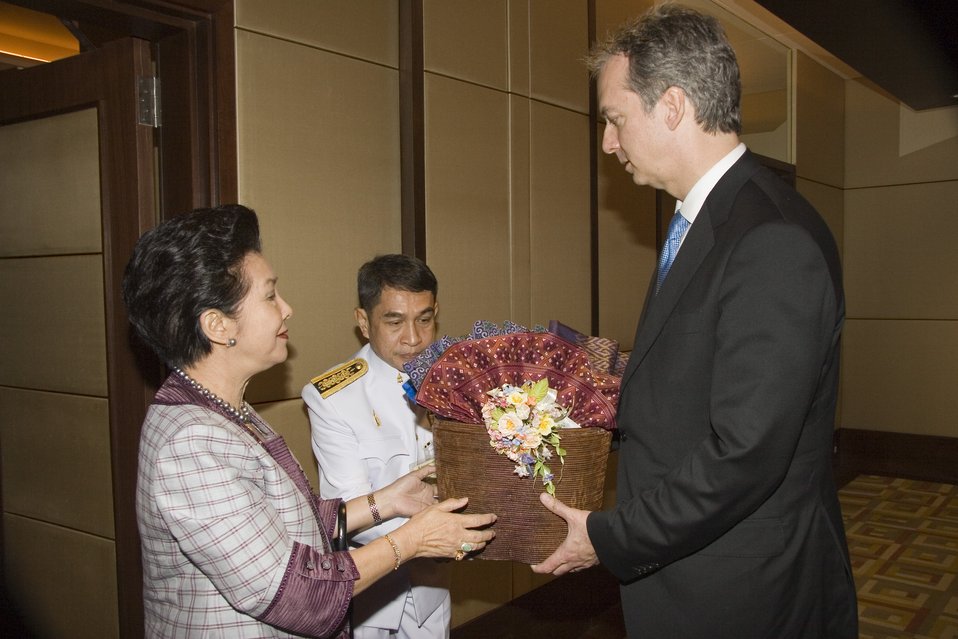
U.S. Ambassador to Thailand Meets With Thai Queen’s Lady-in-Waiting

The Queen’s Lady-in-Waiting, Thanpuying Nravadi Chaixanien, presents a gift to U.S. Ambassador to Thailand Eric G. John at the Conrad Hotel in Bangkok, Thailand July 21, 2009.